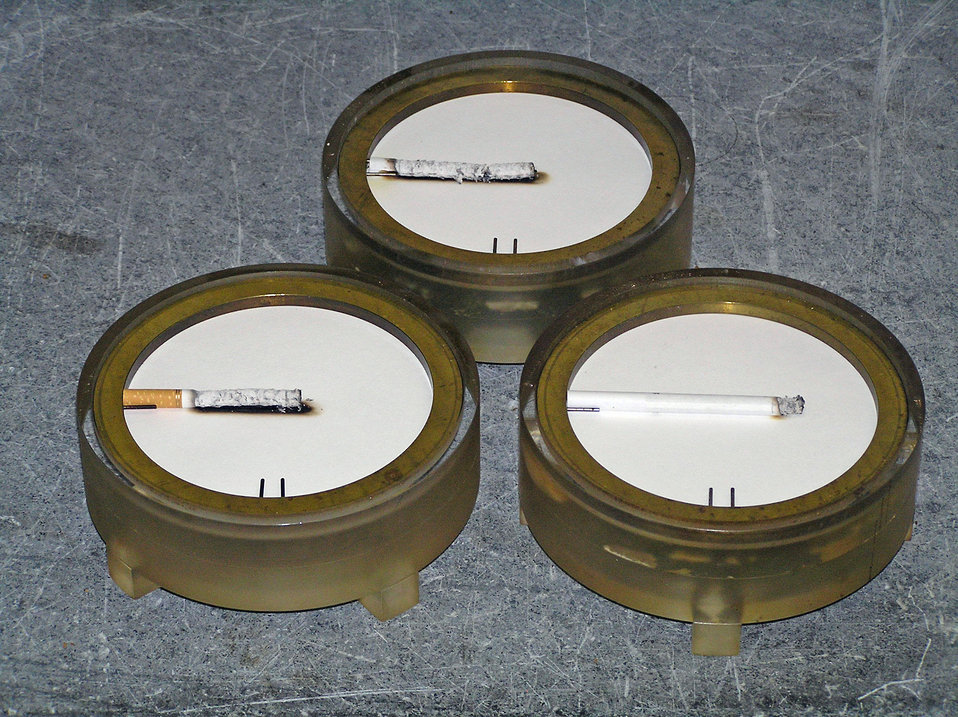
Cigarette-Caused Fires

Examples of results of the Standard Test Method for Measuring the Ignition Strength of Cigarettes (ASTM E2187) are shown. Non-filter (top) and filter (left) cigarettes 'failed,' having burned the full length in the test. The cigarette that extinguished before burning its full length (right) passed. The test calls for performing 40 such determinations for each cigarette and reporting the number of full-length burns. Cigarettes are positioned on the standard ASTM E2187 test substrate.